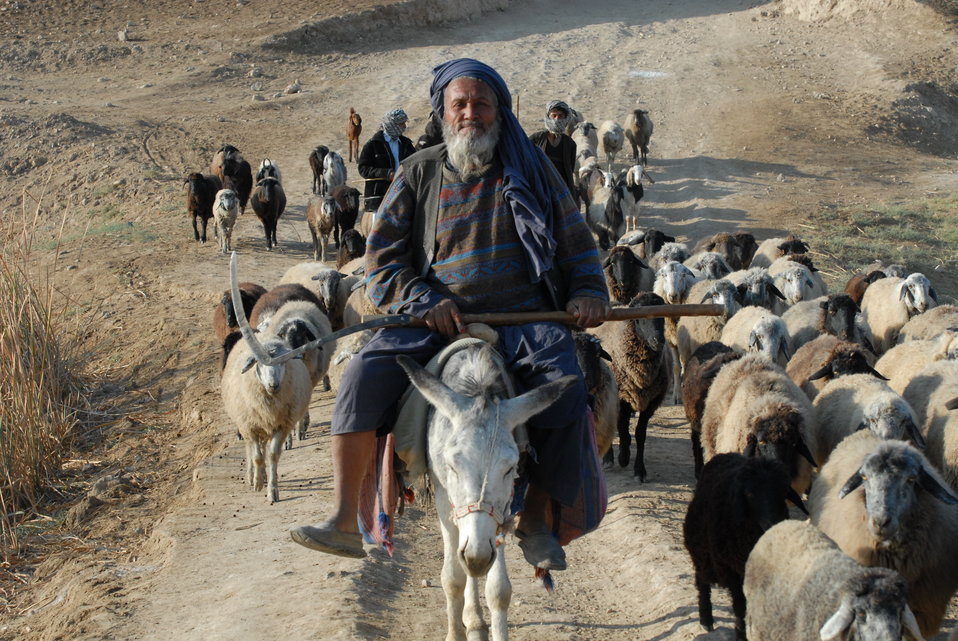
'On the Road' in Balkh Province